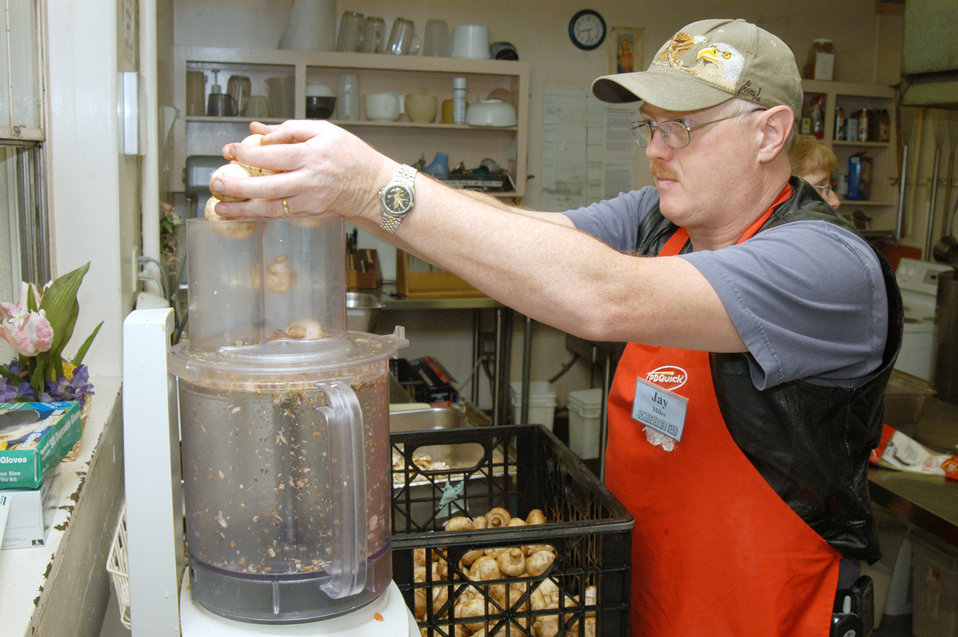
Volunteers give to community at Marian House

COLORADO SPRINGS, Colo. -- Master Sgt. Jay Miles dumps mushrooms into an automatic dicer at Marian House. The house provides food and other aid to people who cannot afford a warm meal. Sergeant Miles is assigned to the 50th Comptroller Squadron at nearby Schriever Air Force Base.